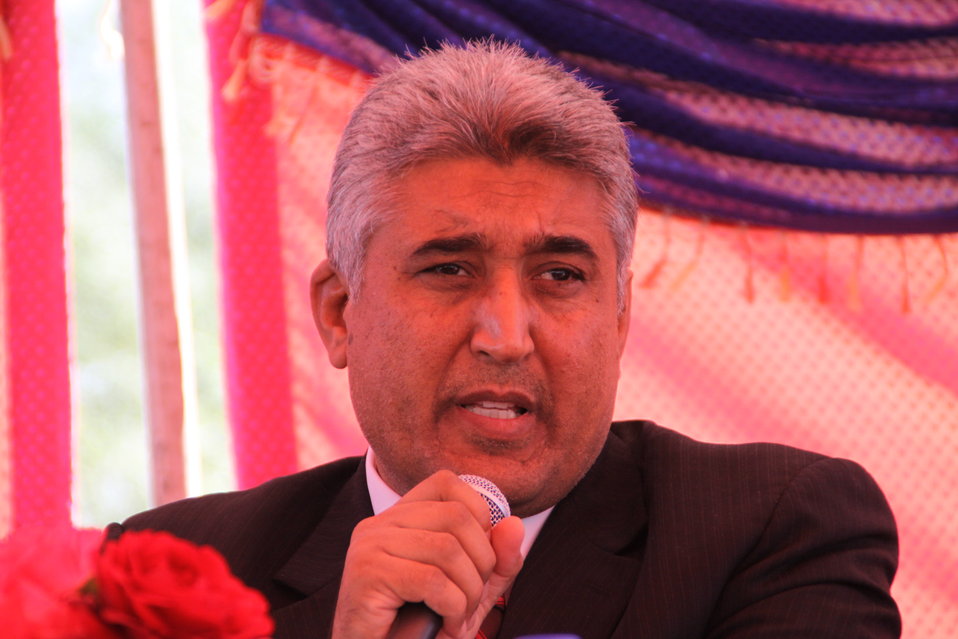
AVIPA Plus Wheat Seed Distribution 101005

US Ambassador Karl Eikenberry and USAID Acting Mission Director Kevin Brownawell joined the Minister of Agriculture, Irrigation and Livestock, H.E. Minister Mohammed Rahimi in signing a Memorandum of Understanding and distributing vouchers to area farmers for wheat and fertilizer.

US Ambassador Karl Eikenberry and USAID Acting Mission Director Kevin Brownawell joined the Minister of Agriculture, Irrigation and Livestock, H.E. Minister Mohammed Rahimi in signing a Memorandum of Understanding and distributing vouchers to area farmers for wheat and fertilizer.